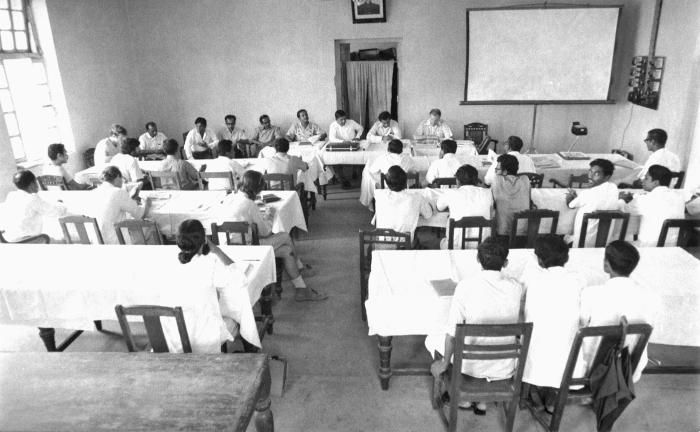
This 1975 image depicted members of the smallpox eradication team, which included E.I.S. officers, W.H.O. officials, and local Bangladesh residents, who were meeting to discuss their findings, and progress, as well as to update records, and to distribute moneys and supplies. These meetings were held monthly, but as smaller groups, teams would meet on a more frequent basis.